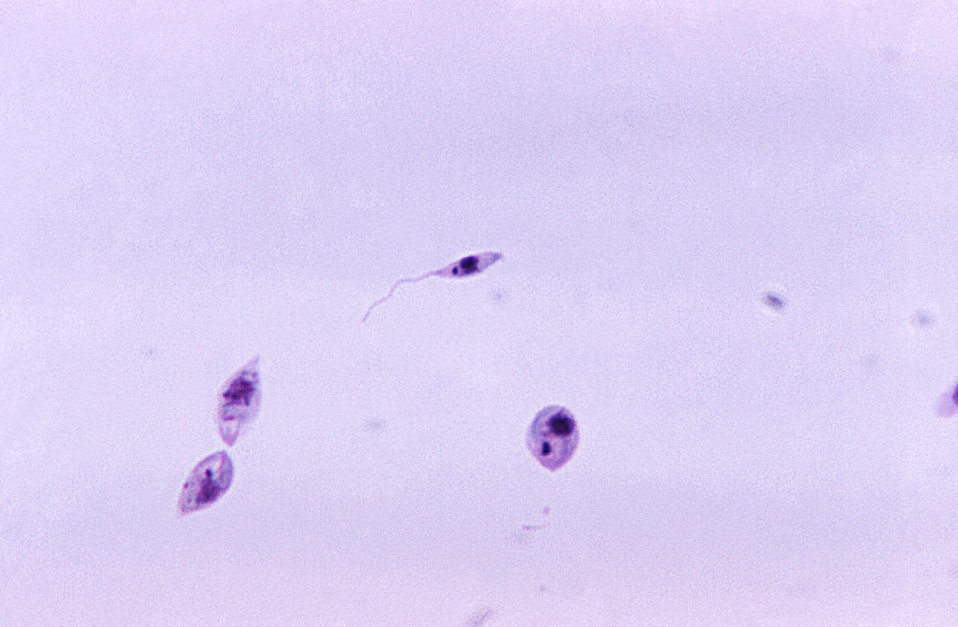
This micrograph revealed the presence of a number of leptomonad-staged, i.e. promastigote, Leishmania sp. protozoa.